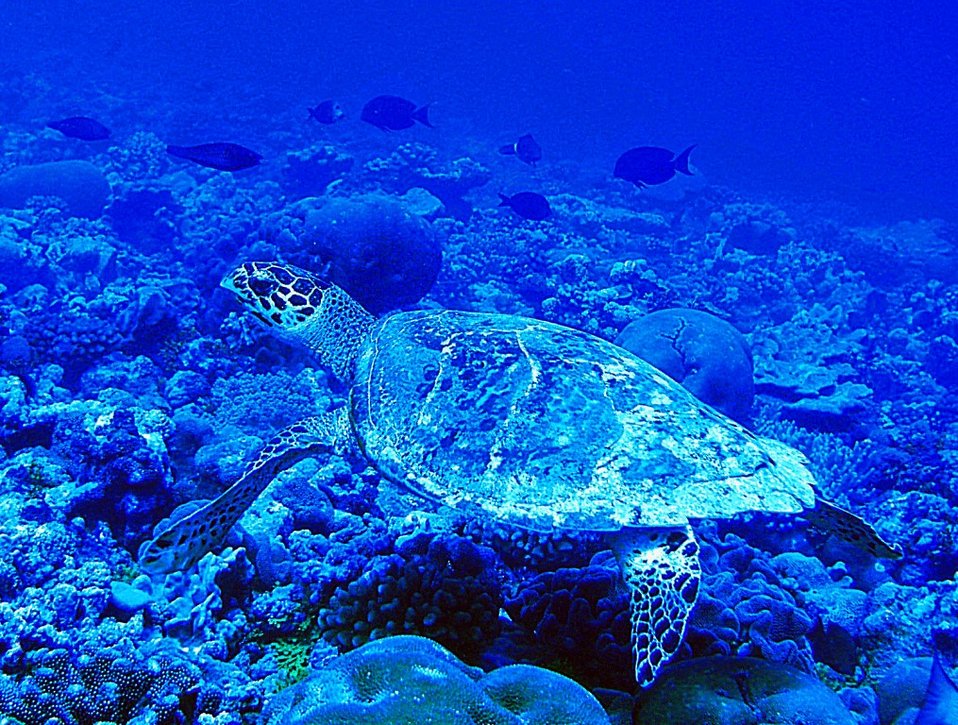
Hawksbill turtle